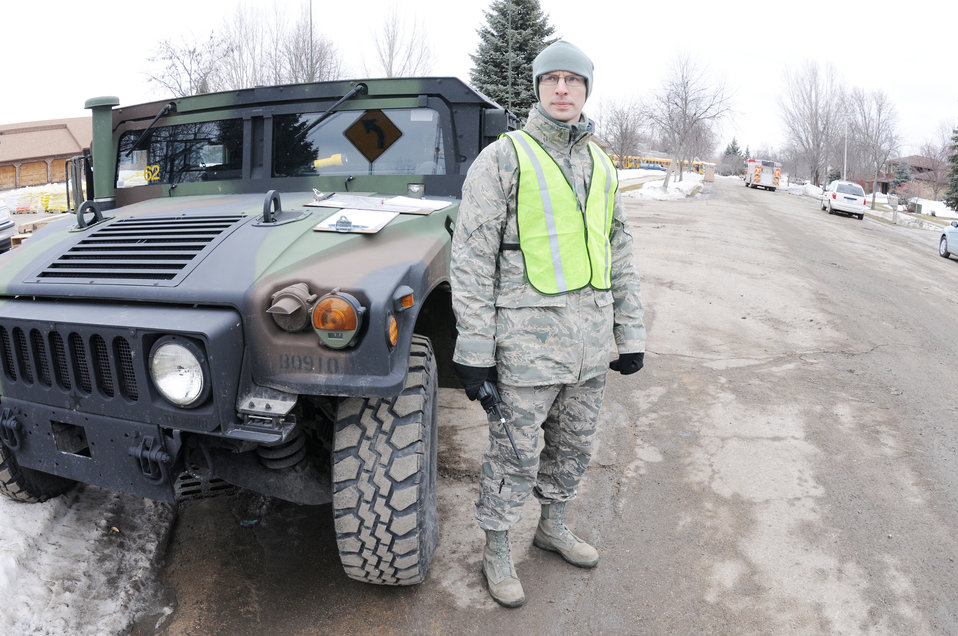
Fighting rising water in Fargo

Senior Airman Greg Byer stands ready to assist flood fighters driving onto the front lines of the rising water March 16, 2010, on the south end of Fargo, N.D. Airman Byer is manning one of the resource control points on River Drive in Fargo, and assigned to the North Dakota Air National Guard's 119th Logistics Readiness Squadron.